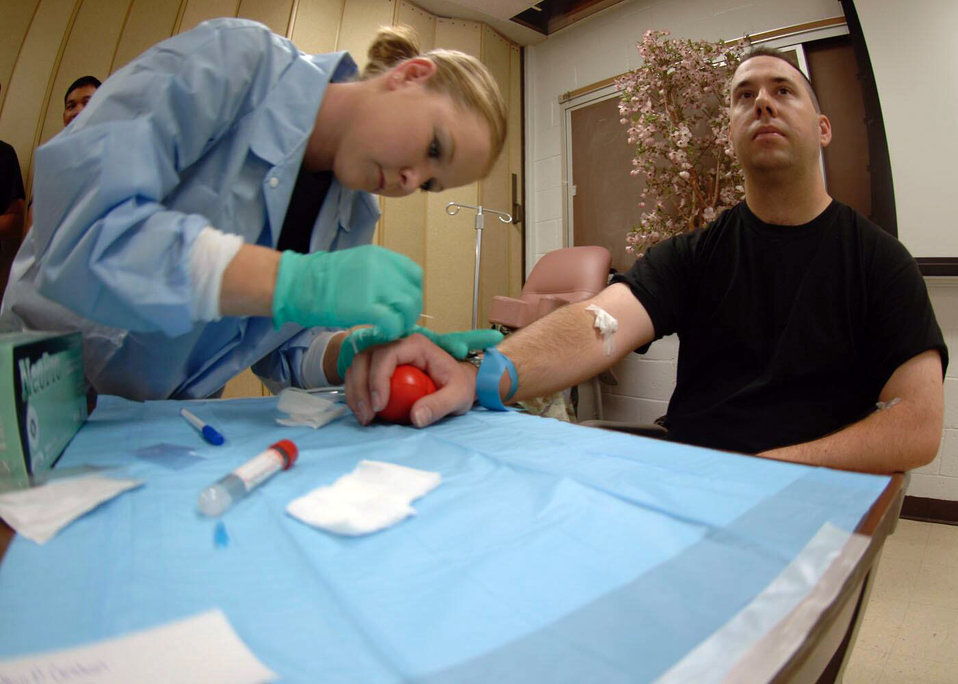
Lining up, moving out

DAVIS-MONTHAN AIR FORCE BASE, Ariz. -- Staff Sgt. Andrea Schultz draws blood from Staff Sgt. Jonathan Graham as part of his predeployment processing for an upcoming air and space expeditionary force cycle. Sergeant Schultz is a medical laboratory apprentice with the 355th Medical Support Squadron, and Sergeant Graham is assigned to the 355th Communications Squadron.